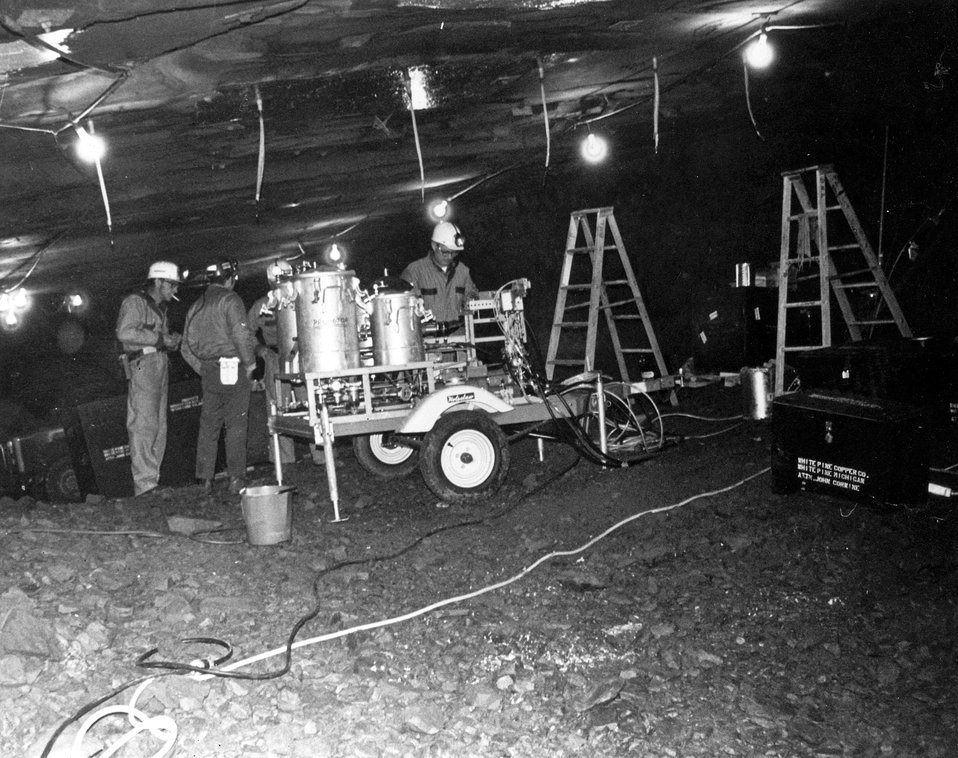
Researches are installing underground mine roof reinforcement
'bolts' developed in the radiation chemistry program at U.S. Atomic
Energy Commission's Brookhaven National Laboratory.